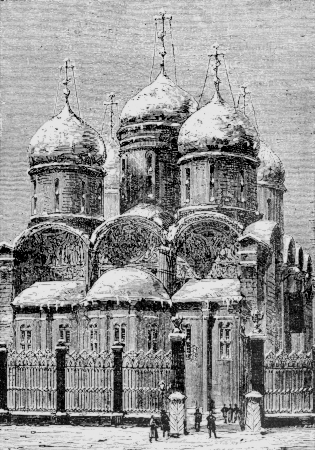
An illustration from the novel 'Michael Strogoff: The Courier of the Czar' by Jules Verne drawn by Jules Férat. Polski: Ilustracja powieści Juliusza Verne'a 'Michał Strogow, kurier carski' autorstwa Julesa Férata. Français : 'Michel Strogoff. Le courier du tzar', Jules Férat.